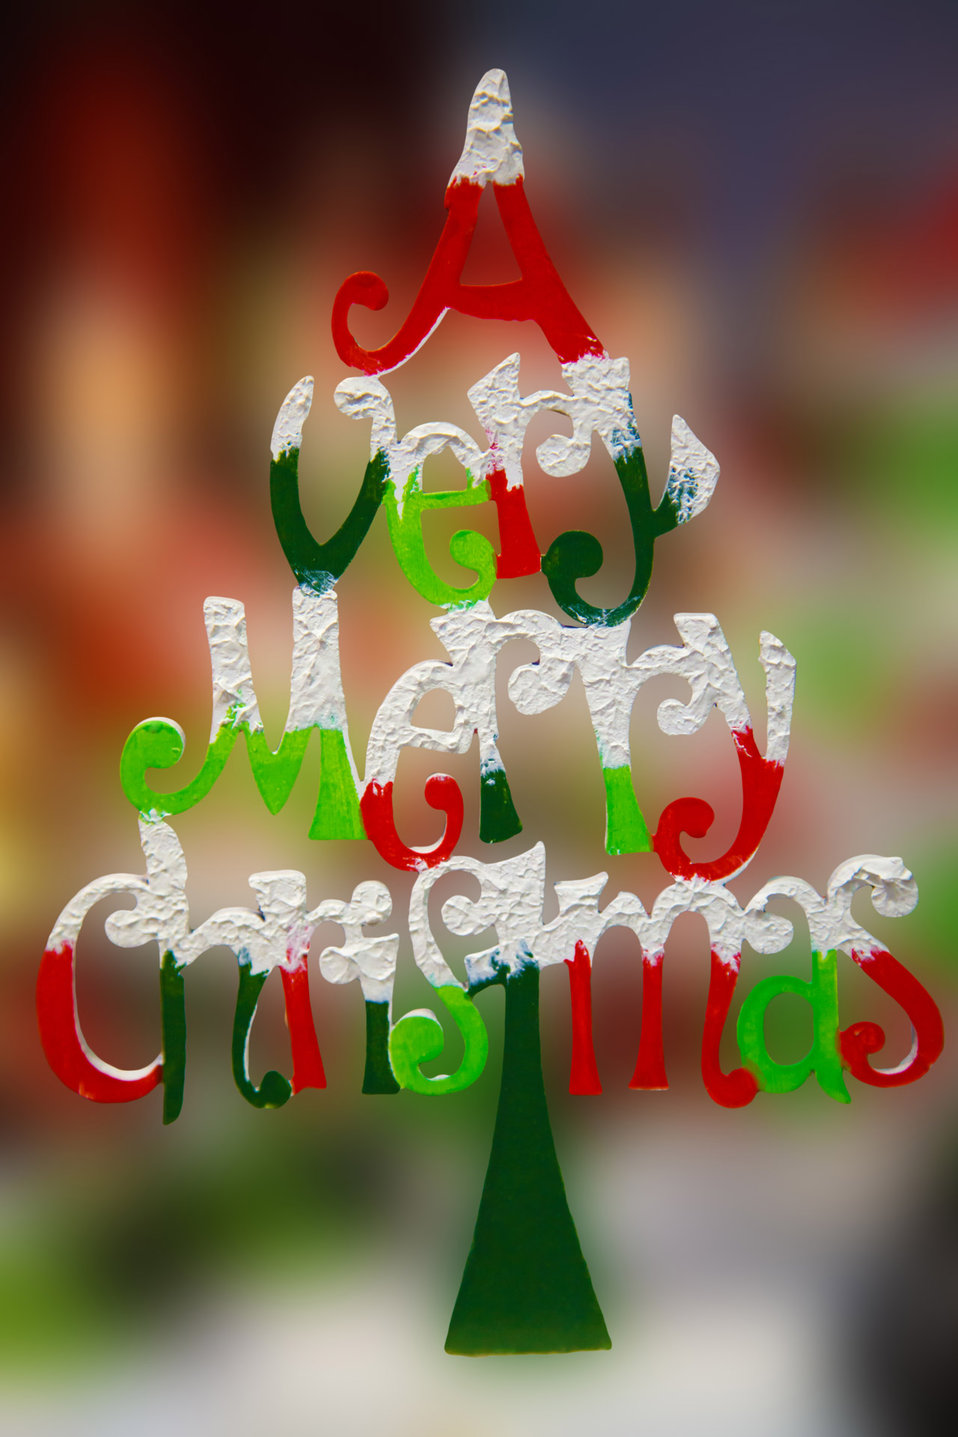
A very merry christmas text on christmas background.